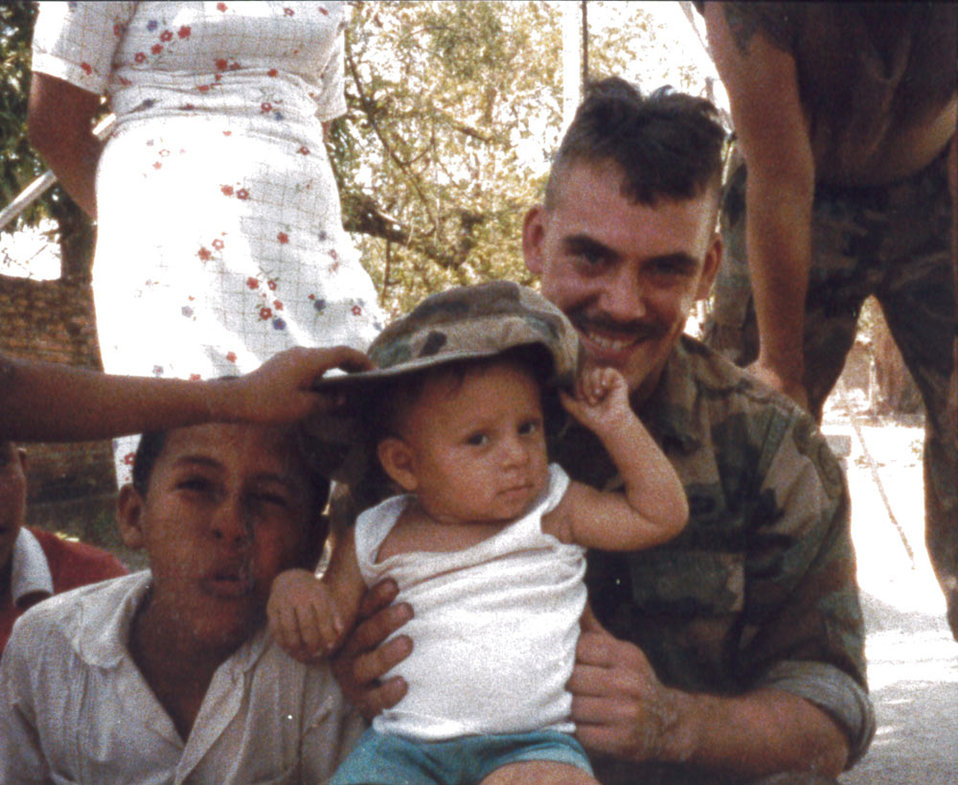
James Bettaso-Midwest Region

Jamie B. Bettaso, a R3 Wildlife Biologist in Ecological Services, entered the regular Army in 1987 for a three-year enlistment. He was a Combat Medic (91A) attached to the 307th Medical Battalion, 82nd Airborne Division at Fort Bragg, N.C. He was deployed for Operation Golden Pheasant in March 1988 to Honduras (photo is of then), where he provided medical support to indigenous. He also deployed to Guyana in March 1989 with the 128th Combat Support Hospital for humanitarian medical aid to locals of Lathem, Guyana. He was recalled to service for Operation Desert Shield/Storm in 1991 for a stateside assignment. He joined the California National Guard in January 1992 as a Combat Medic with the 579th Engineer Battalion and served until March of 2001. With the Cal Guard, he deployed to Bangladesh in January 1993 and Honduras in April 1995 to build hurricane/cyclone shelters with the engineers. He changed his military skills from Combat Medic to Combat Engineer and rose to the rank of Staff Sergeant (E-6) by the time of his military departure in March 2001 with 14 good years of peace time service.